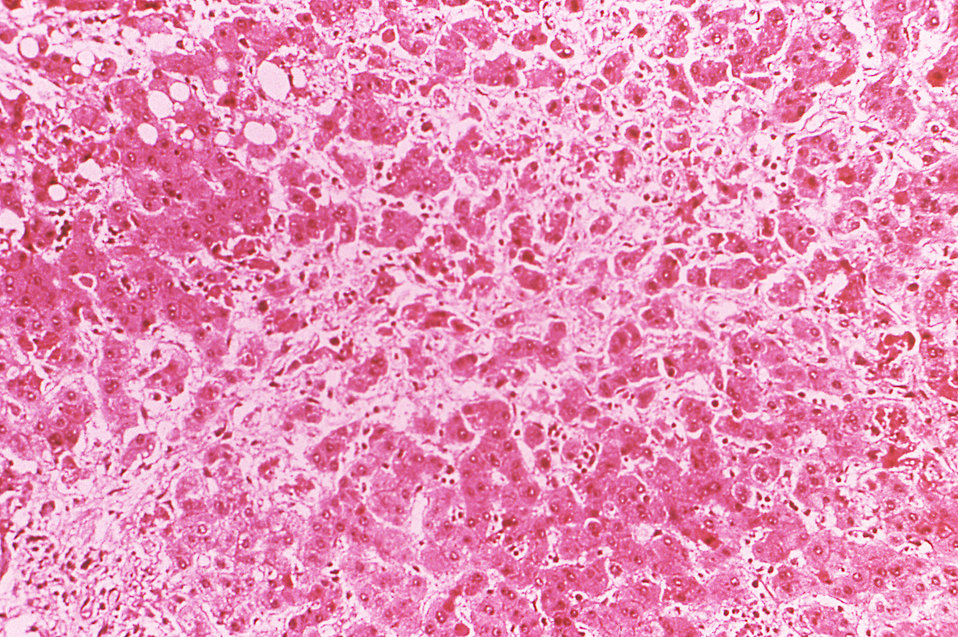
Under a magnification of 100X, this hematoxylin-eosin-stained (H&E) photomicrograph depicts the cytoarchitectural changes found in a liver tissue specimen extracted from an Ebola disease patient in Zaire. This particular view reveals a 'zone of acidophilic necrosis within which there were several degenerating hepatocytes. Taking place at the periphery of the necrotic area, were microvacuolar fatty changes."